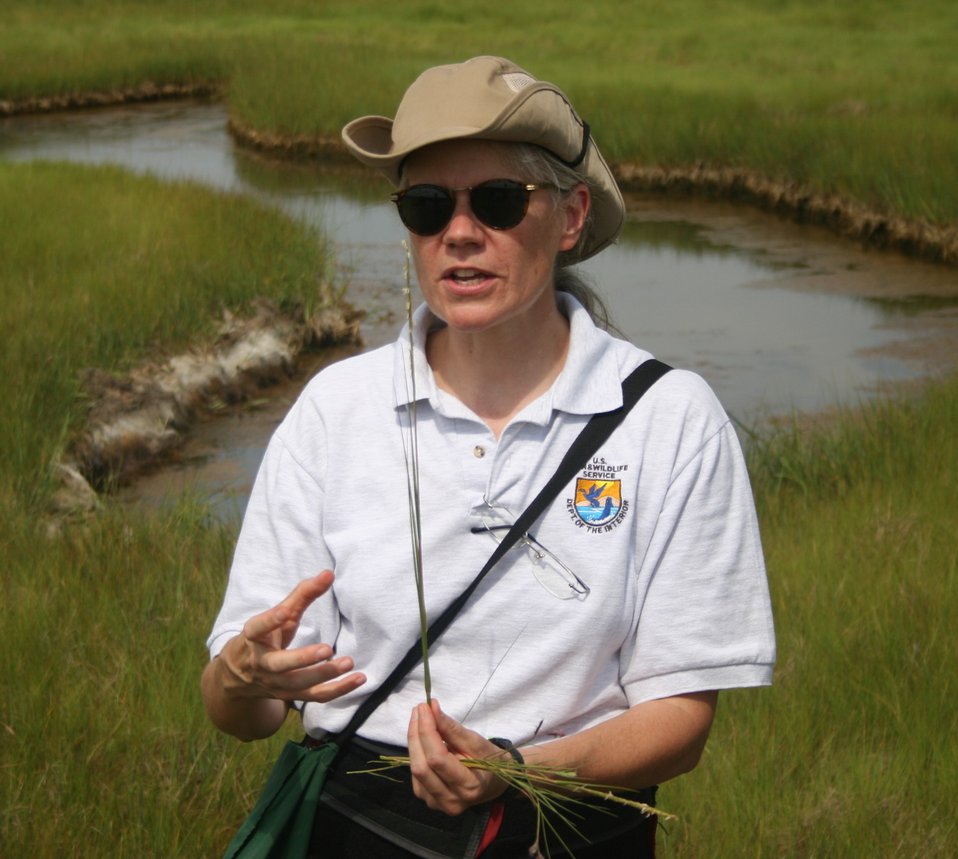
Dr. Susan C. Adamowicz

Service LMRD Coastal Biologist Dr. Susan C. Adamowicz in the field.